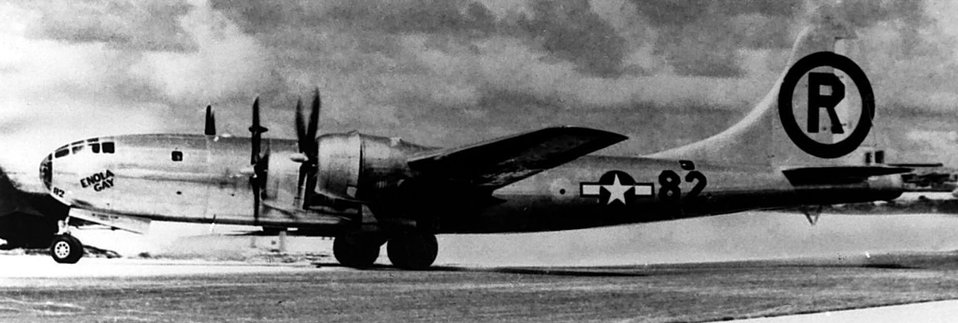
Enola Gay

1940's -- Enola Gay